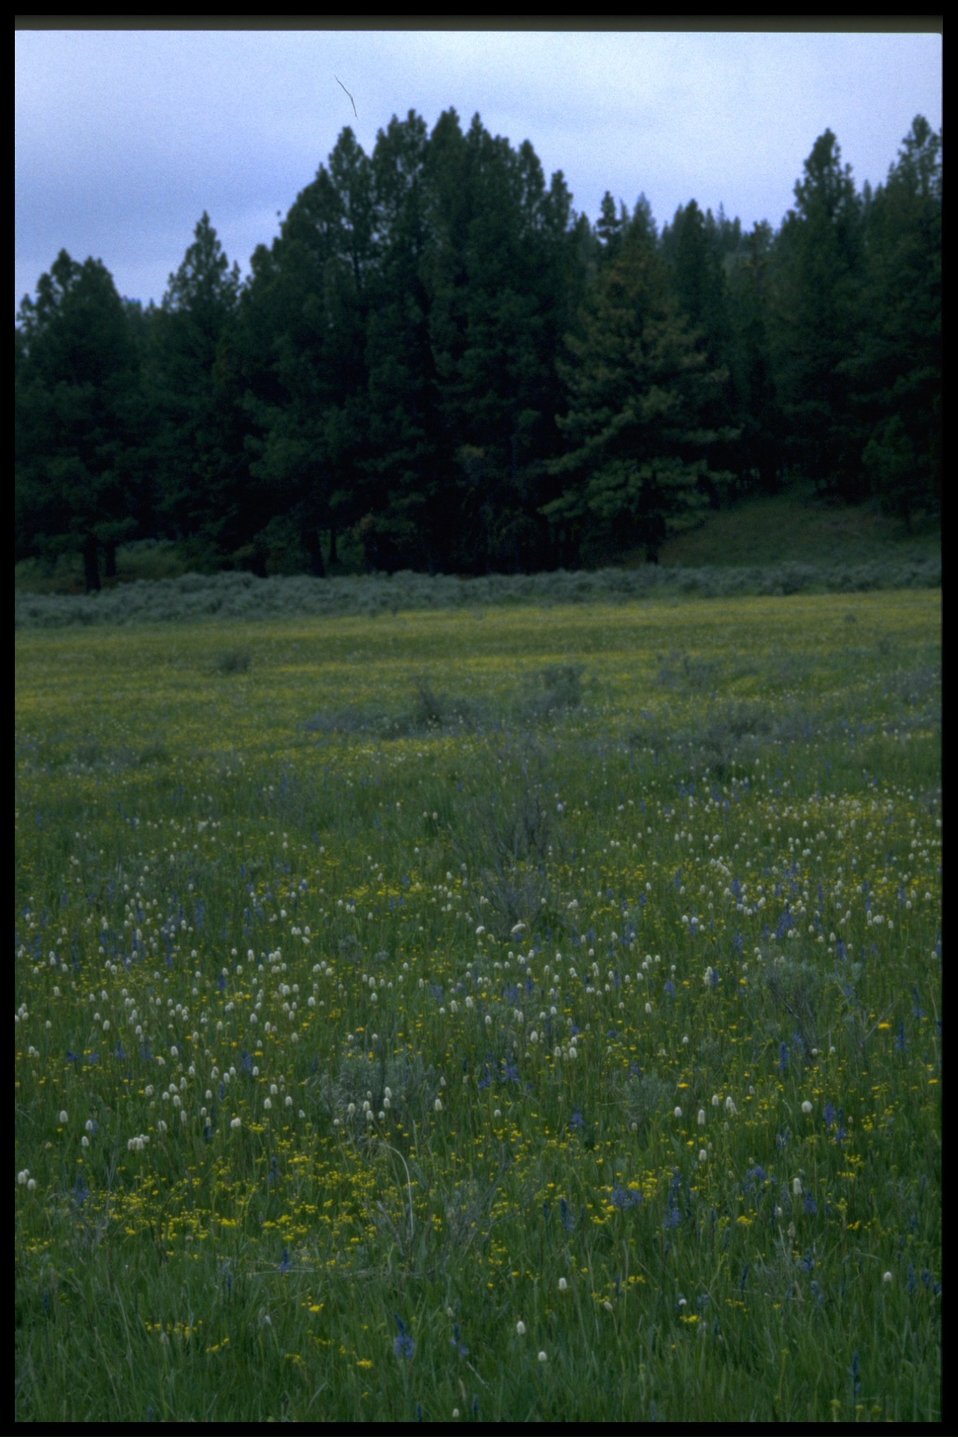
Meadow display of small camas (Camassia Quamash), American Bistort (Polygonum bistortoides) and slenderfruit lomatium (Lomatium leptocarpum).